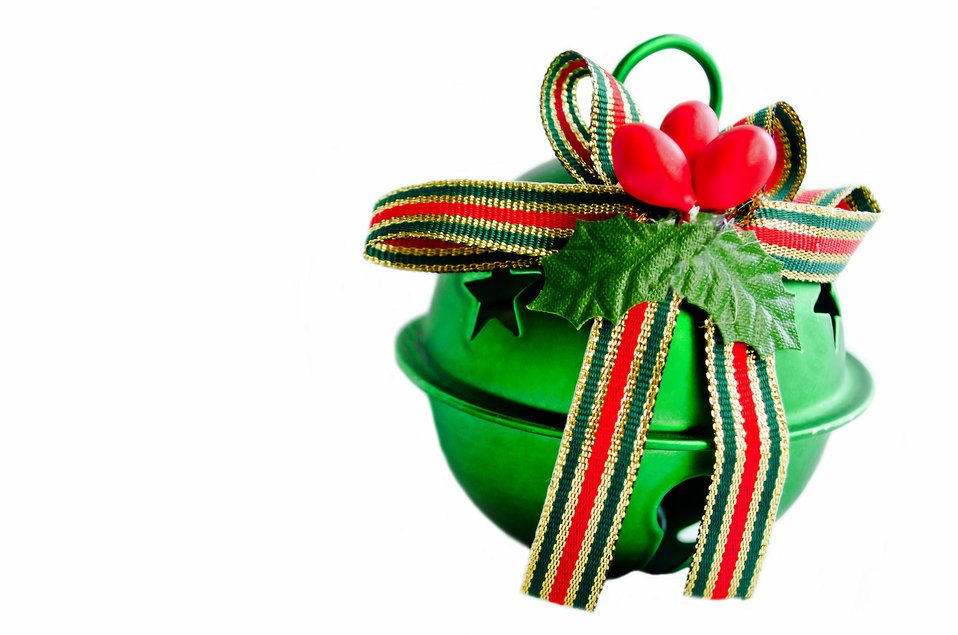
Christmas bell.